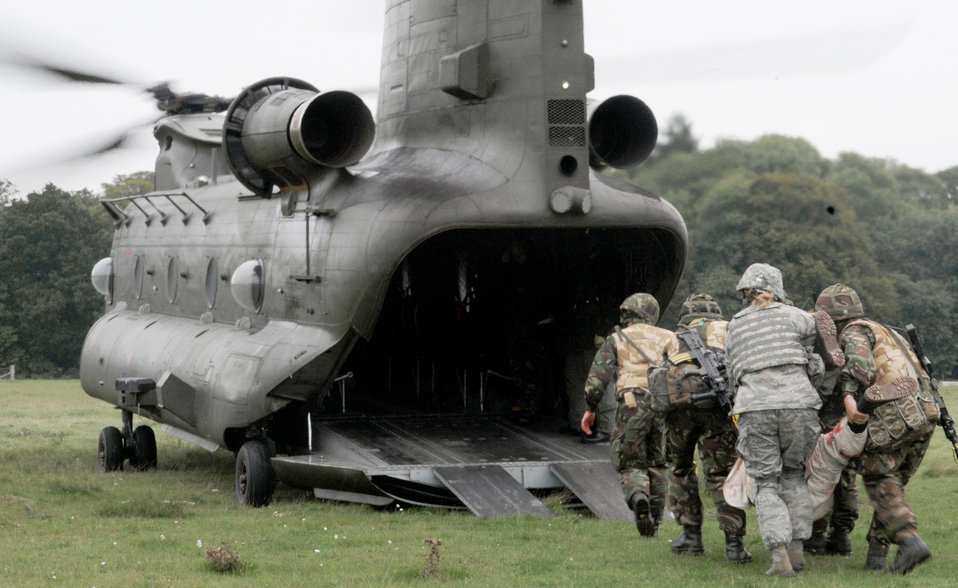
Security forces Airmen help prep RAF Regiment for Afghanistan tour

Members of the Royal Air Force Regiment and Tech. Sgt. Tisha Bate carry a